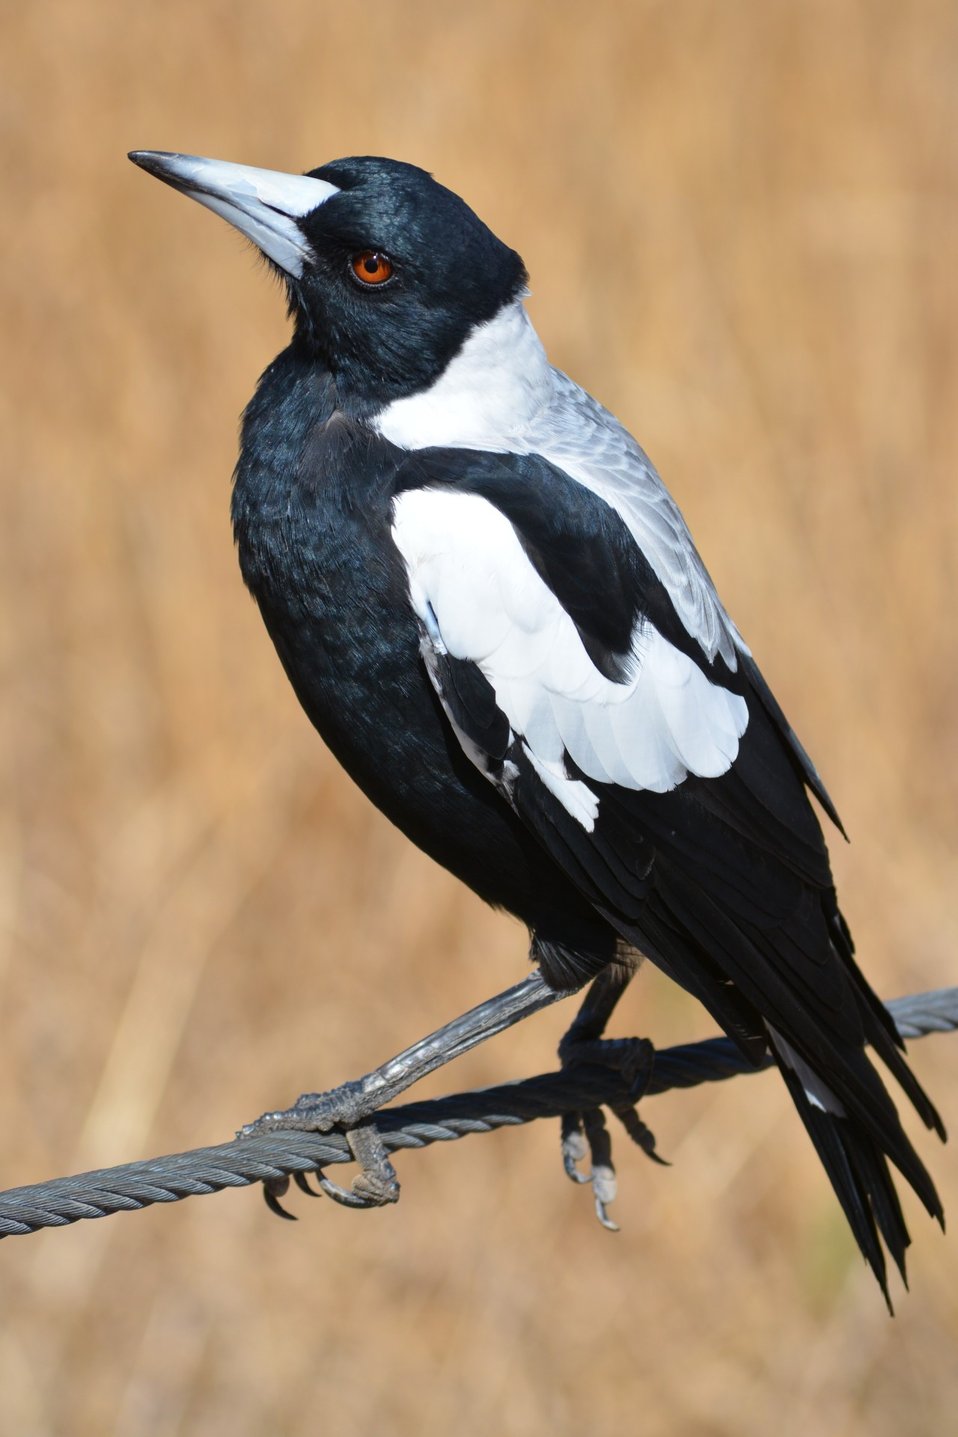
Australian magpie resting.